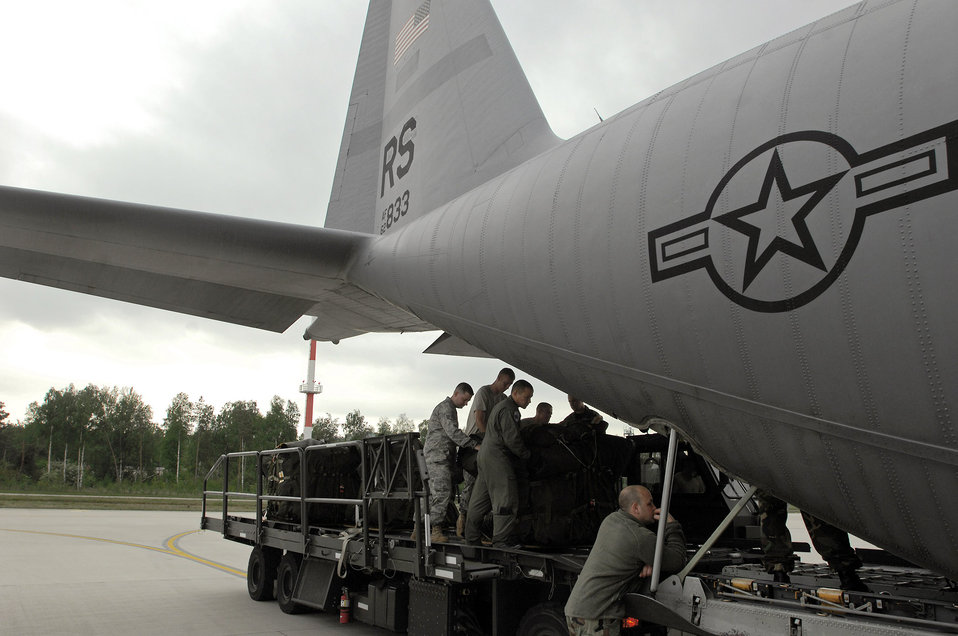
Loading up to support NASA

Airmen from the 1st Combat Communication Squadron and 37th Airlift Squadron prepare to load lifesaving equipment onto a C-130 Hercules May 9 at Ramstein Air Base, Germany. The Airmen supported NASA's launch of Space Shuttle Atlantis May 11.